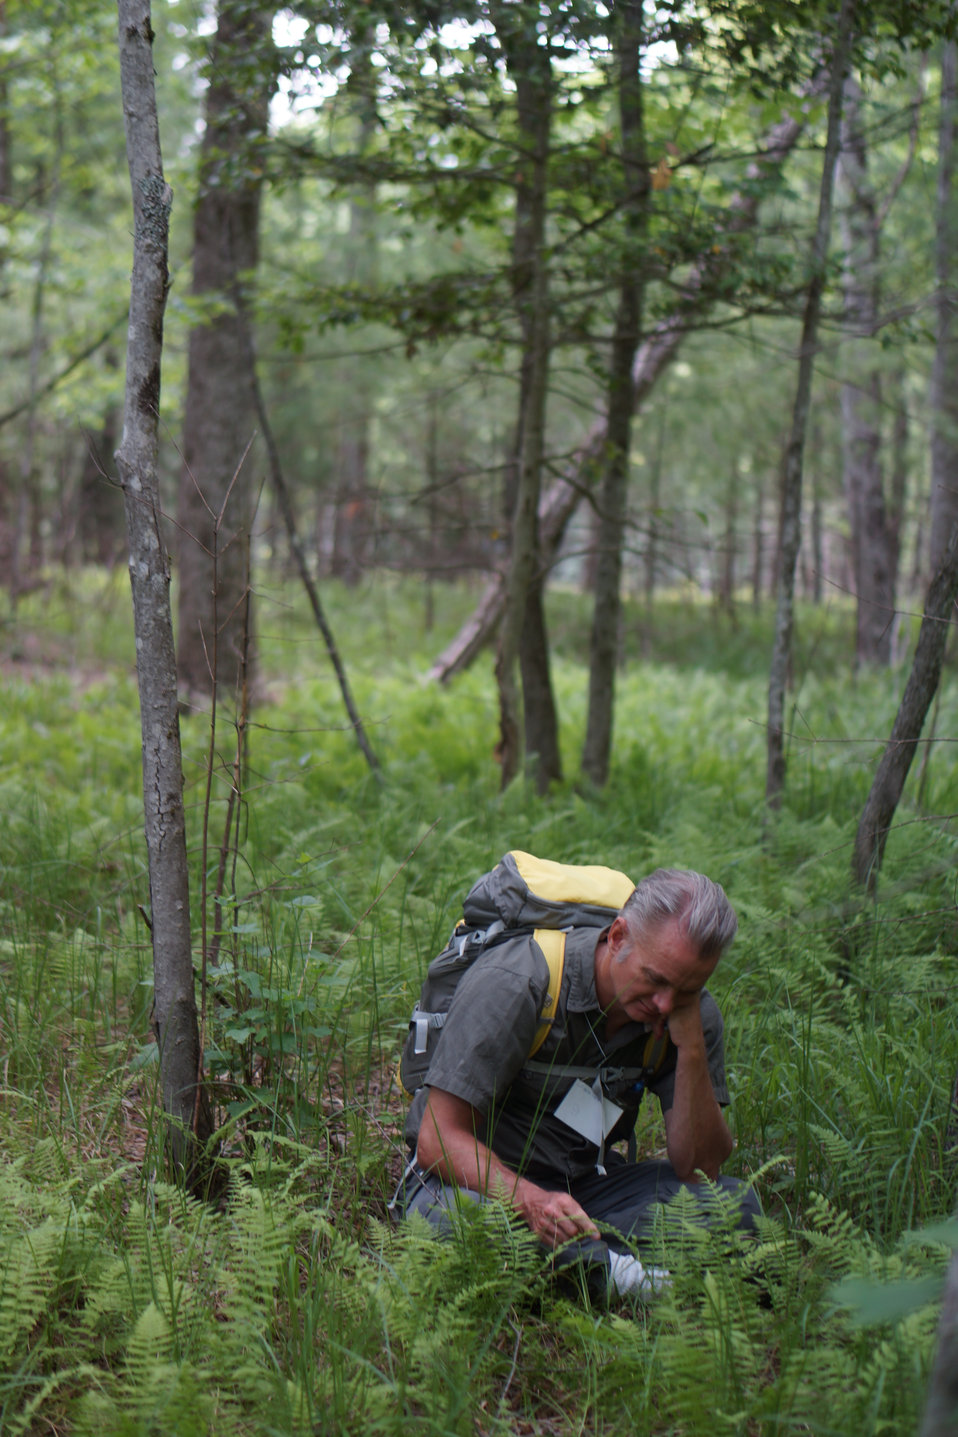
Rick Foster

In May, bog conservationists from Tennessee, North Carolina, and Georgia convened in the north Georgia mountains for the spring, 2014 meeting of the Bog Learning Network. The event provided an opportunity for biologists to see, first hand, the result of management efforts at two north Georgia bogs. More importantly, the outings provided an opportunity to share innovative approaches to bog management, such as the role of the Georgia Plant Conservation Alliance in conserving rare plants and coordinating a cadre of volunteers to work on bog management.

The Bog Learning Network was convened in the winter of 2013 as a way to bring together people working for bog conservation across the Southern Appalachians. Southern Appalachian bogs are one of North America’s rarest habitats and home to many rare plants and animals.